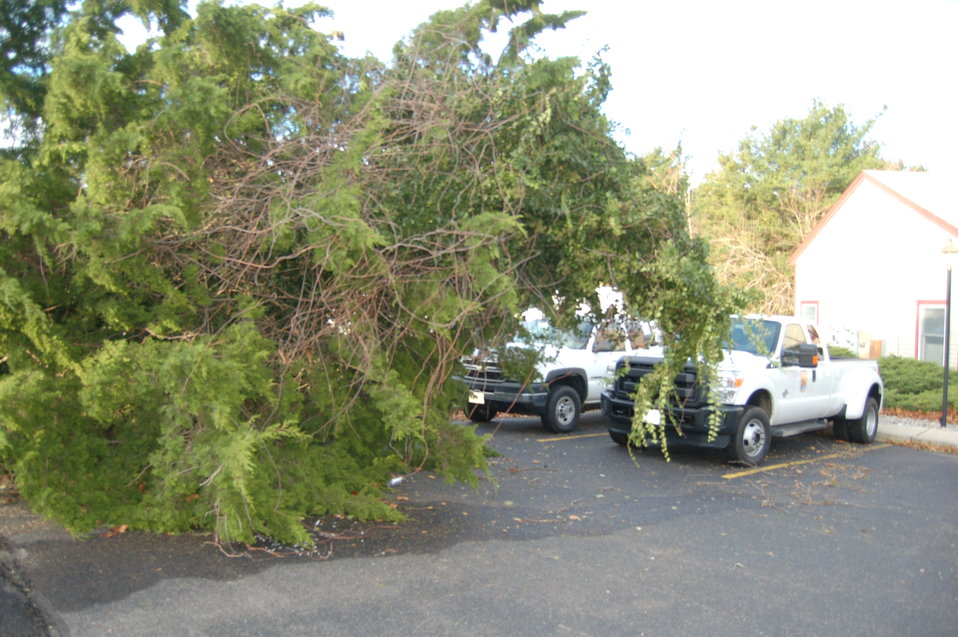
Hurricane Sandy hit the New Jersey Field Office

A fallen tree nearly misses the government vehicles and the New Jersey Field Office in Pleasantville, N.J.